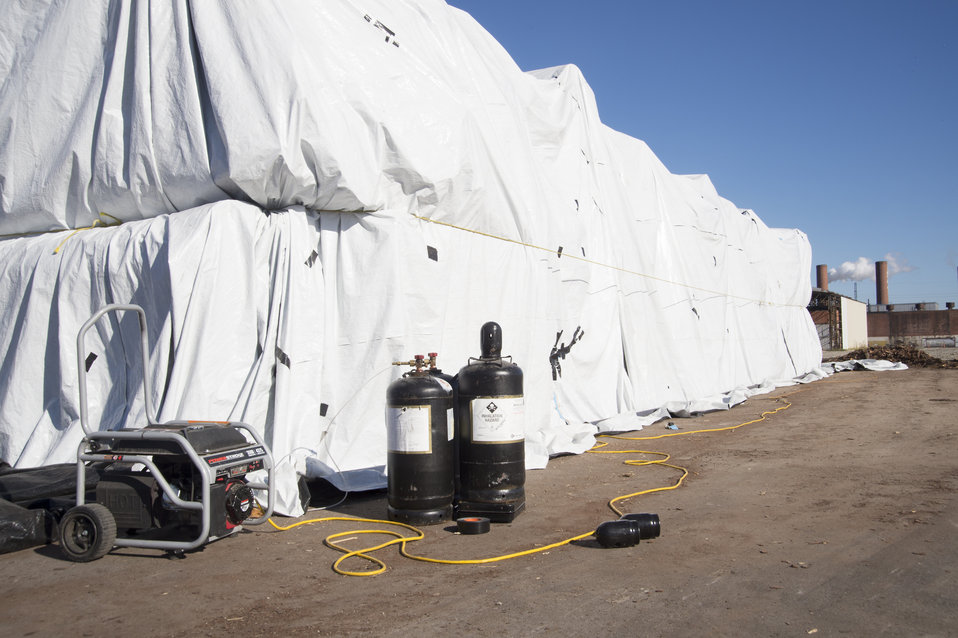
U.S. Department of Agriculture’s (USDA) Animal and Plant Health Inspection Service (APHIS) employees monitor the fumigation process of logs for export near the Port of New Orleans in New Orleans, LA on Wednesday, Nov. 20, 2013. The fumigation process prevents the spread of any bacteria or insect that might cause harm to a foreign country’s agriculture.